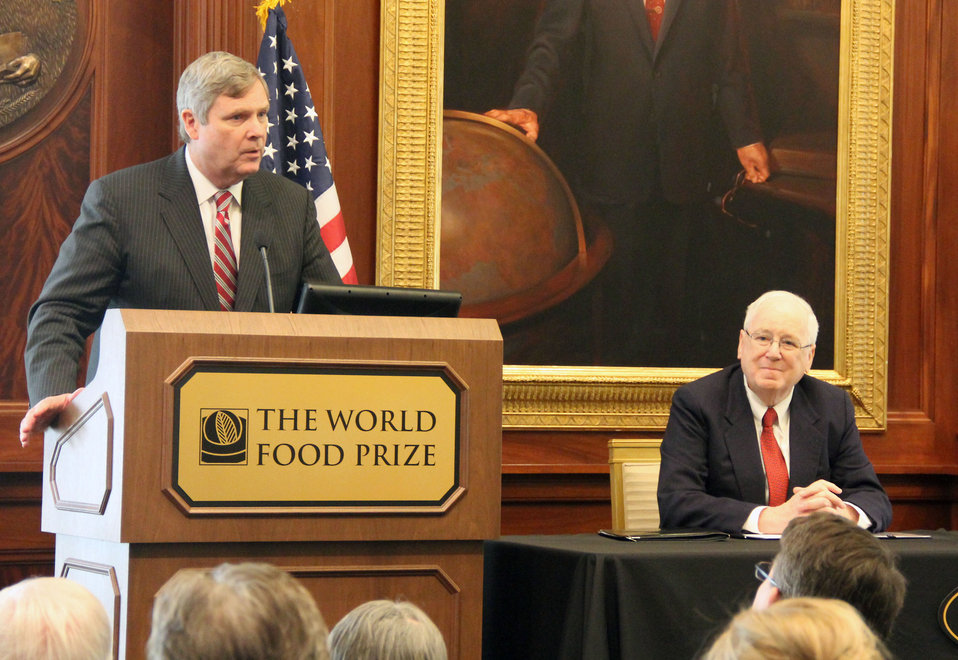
Agriculture Secretary Tom Vilsack makes remarks as former Ambassador to the Kingdom of Cambodia Kenneth M. Quinn of the World Food Prize Foundation looks on during the World Food Prize Foundation Cement Partnership to Support USDA's Wallace-Carver Internship Program, at the World Food Prize Hall of Laureates in Des Moines, Iowa, on Feb. 19, 2013, before a crowd of 200 youth and business leaders to formalize a partnership enhancing the Wallace-Carver Internship Program for students involved in cutting-edge agriculture, science and research.